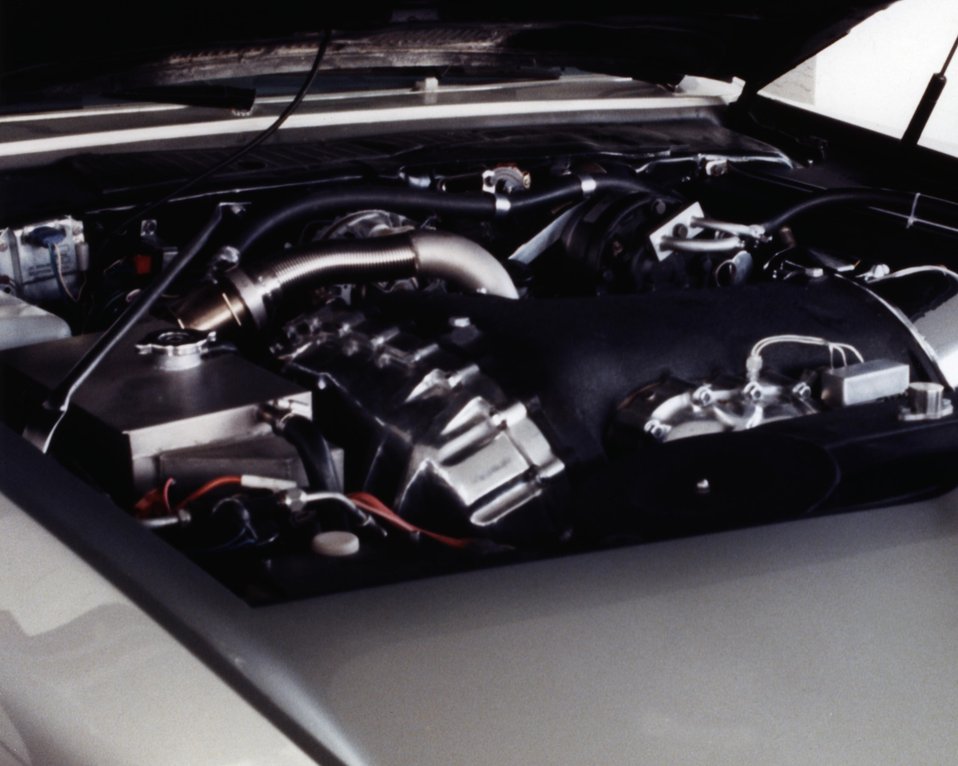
CLOSEUP OF ENGINE COMPARTMENT OF TURBINE POWERED AUTOMOBILE.